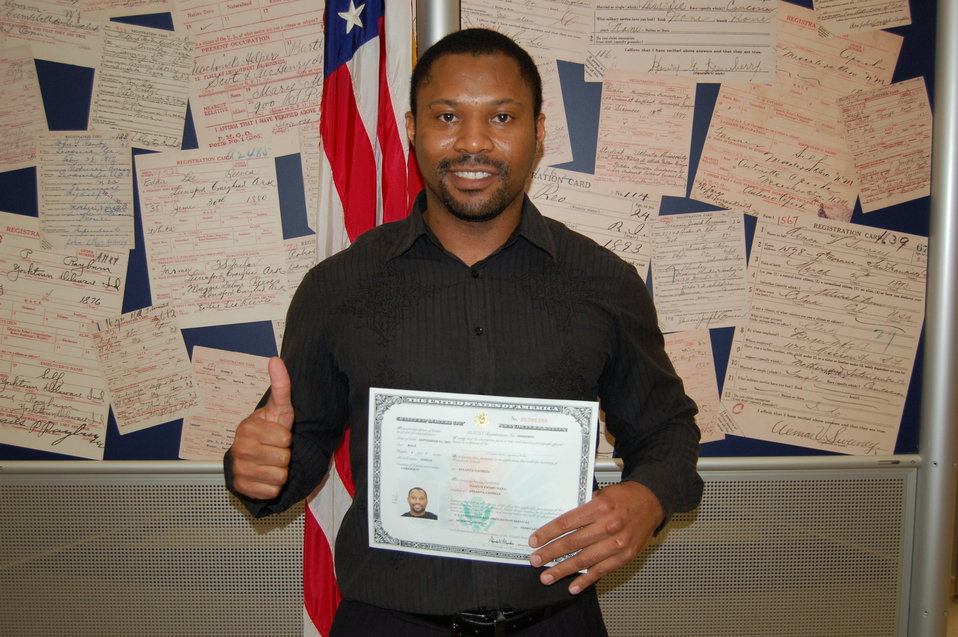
New Citizens